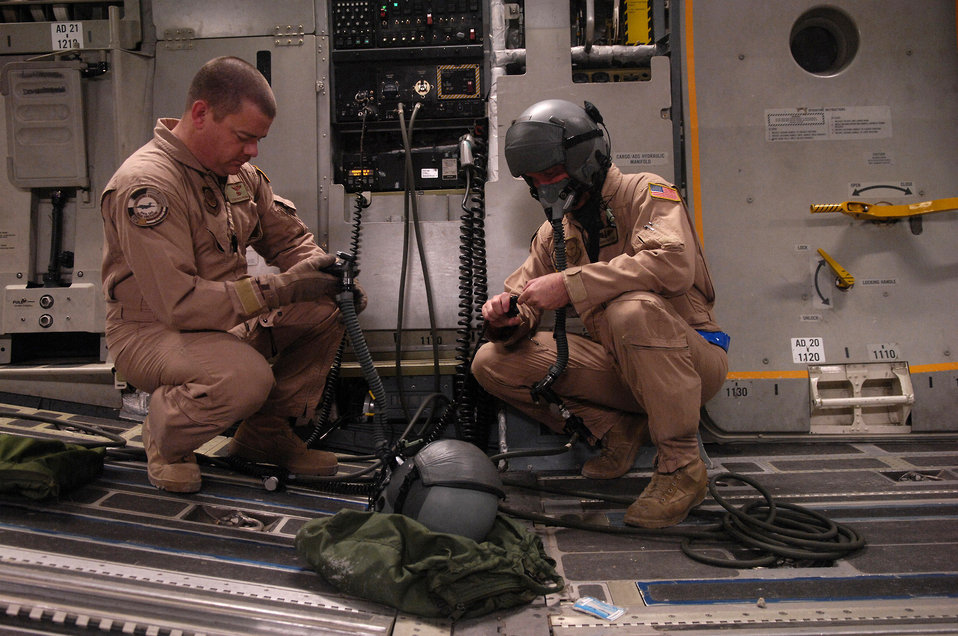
Airmen airdrop 80,000 pounds of food, supplies for Afghans

Tech. Sgt. Brad Pilgrim and Staff Sgt. Chris Koch preflight their oxygen equipment on a C-17 Globemaster III for a Joint Precision Airdrop Delivery System of 40 bundles of humanitarian supplies to a drop zone Jan. 14 in Afghanistan. Sergeants Pilgrim and Kock are loadmasters from the 17th Airlift Squadron from Charleston Air Force Base, S.C., and are deployed to the 816th Expeditionary Airlift Squadron in Southwest Asia.